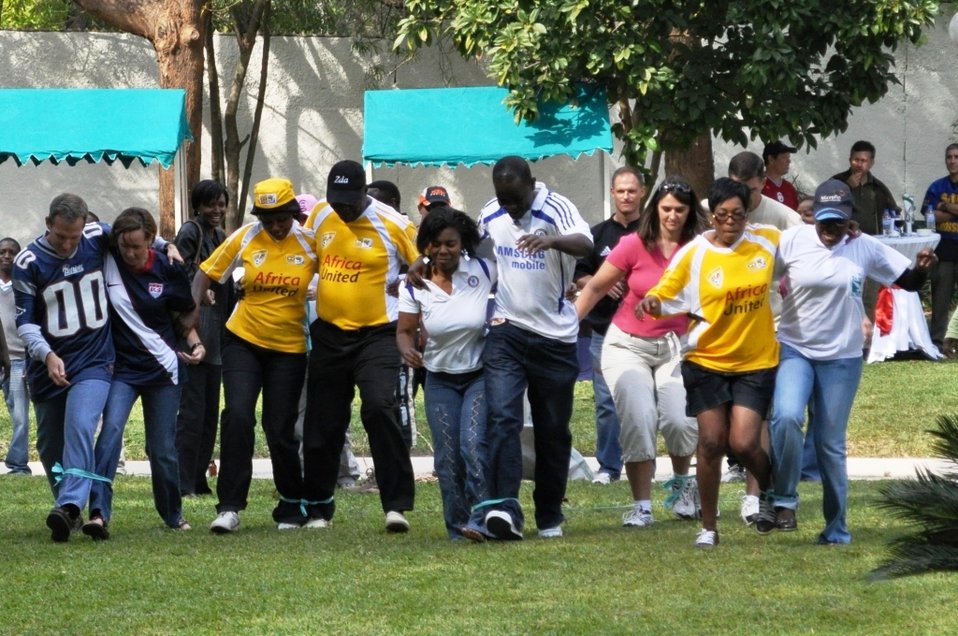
Zambian and American Pairs Partner in 3-Legged Race

Zambian and American pairs partnered in the 3-legged race at the U.S. National Day commemoration June 12,2010, at the Ambassador's residence in Lusaka, Zambia.